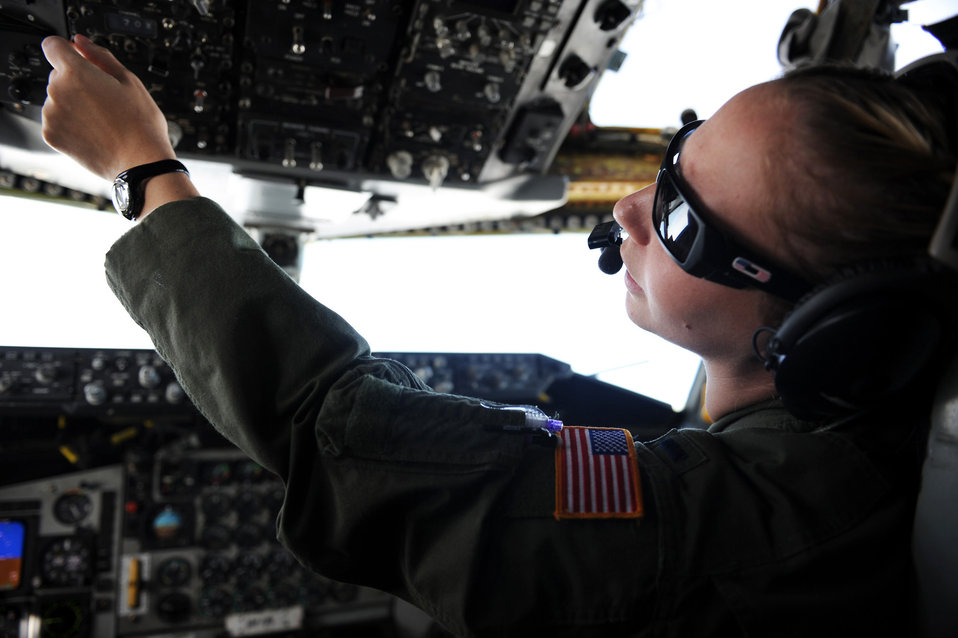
Air Refueling

1st Lt. Emily Kubusek flys the historic